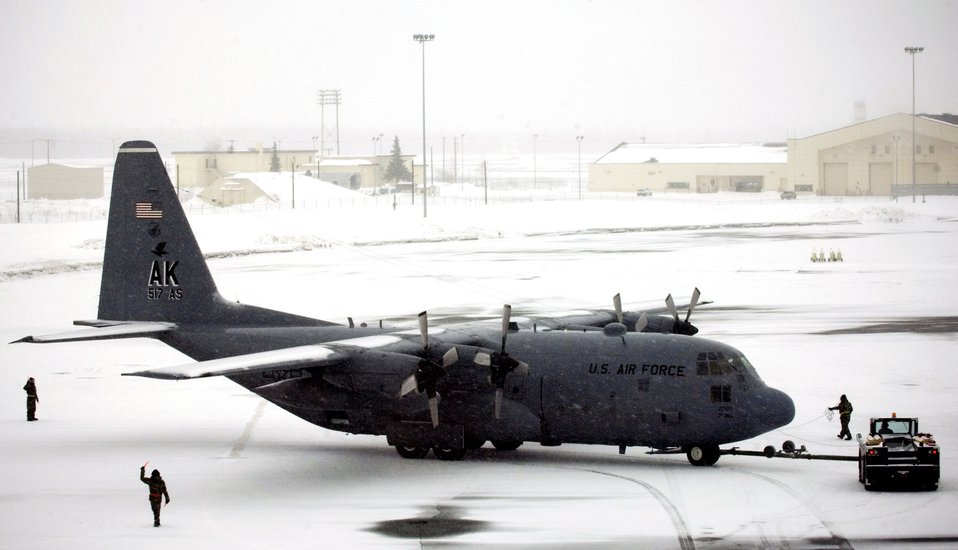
Goodbye Hercules

After 43 years of continuous airlift service, the era of the C-130 Hercules is ending at Elmendorf Air Force Base, Alaska. Airmen there soon will see C-17 Globemaster IIIs taking over the airlift mission.